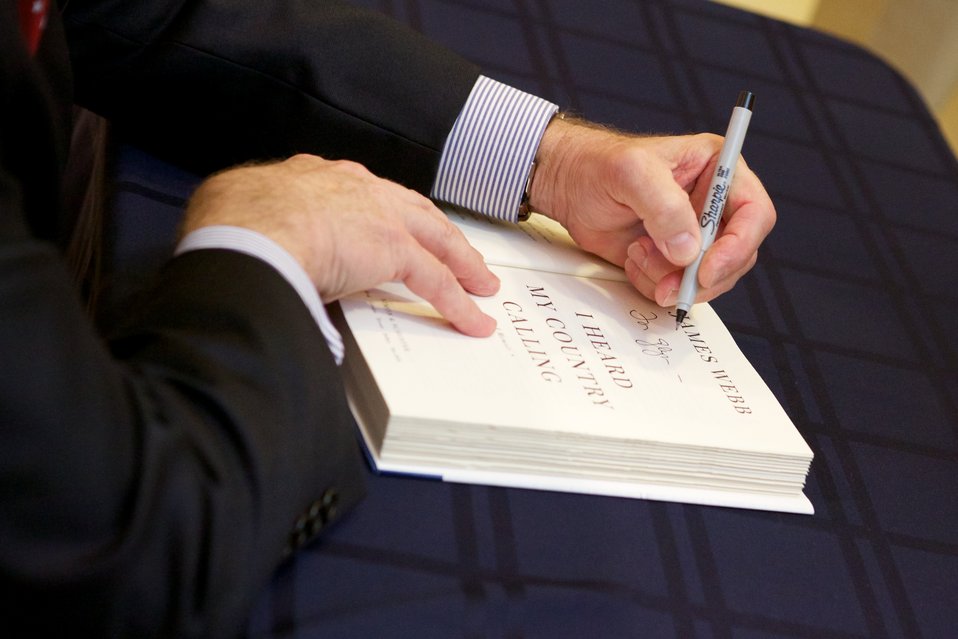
I Heard My Country Calling: A Memoir I Heard My Country Calling: A Memoir; James Webb, Former Senator and author, autographs books after his lecture